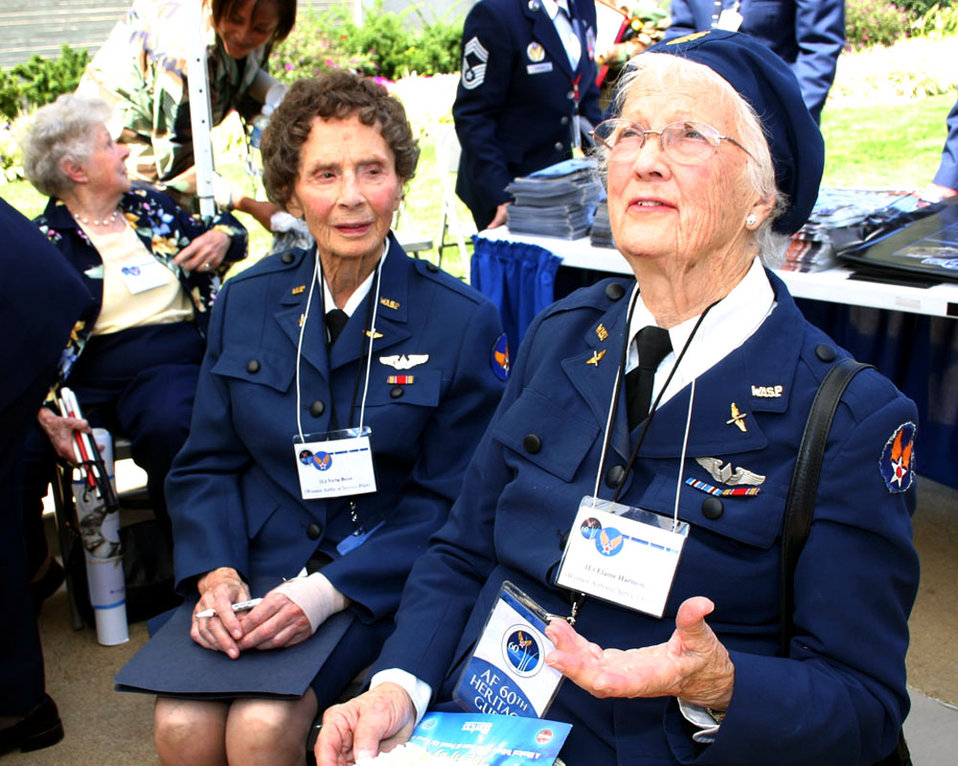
Women Airforce Service Pilots join in Air Force 60th anniversary celebration

Women Airforce Service Pilot 1st Lieutenants Velta Benn and Elaine Harmon speak to guests at the Air Force 60th anniversary celebration in the Pentagon courtyard Sept. 18. WASPs performed flying duties during World War II like ferrying aircraft from factories to military bases and towing targets for gunnery training.